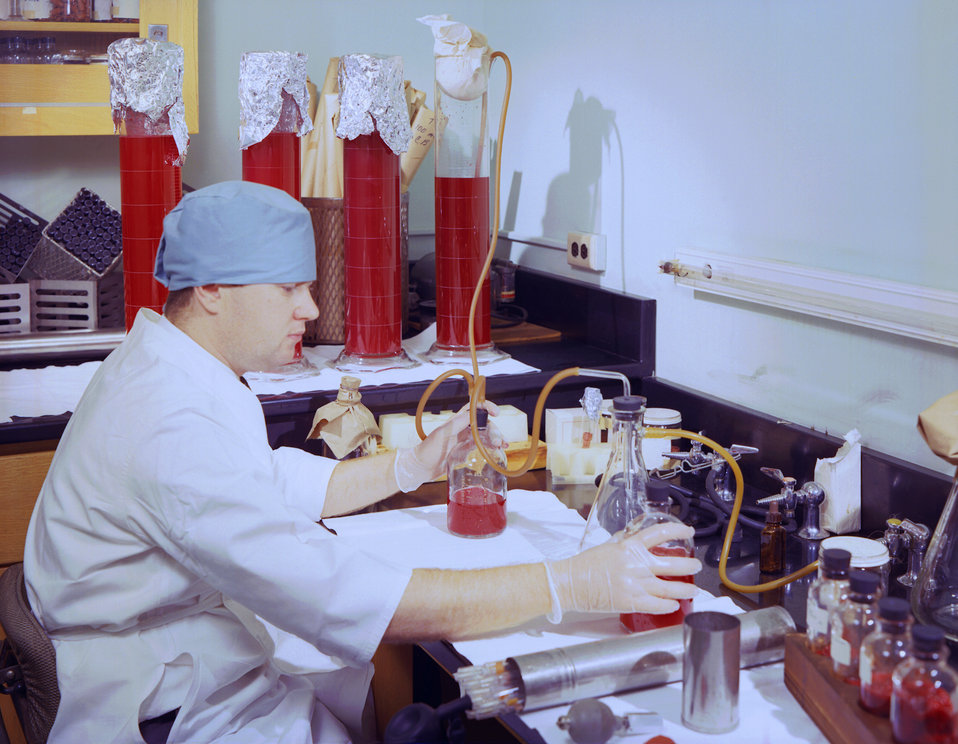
This historic 1963 photograph depicted laboratorian, Bill Hope, as he was processing horse blood, which would subsequently be used in the large-scale production of reagents.